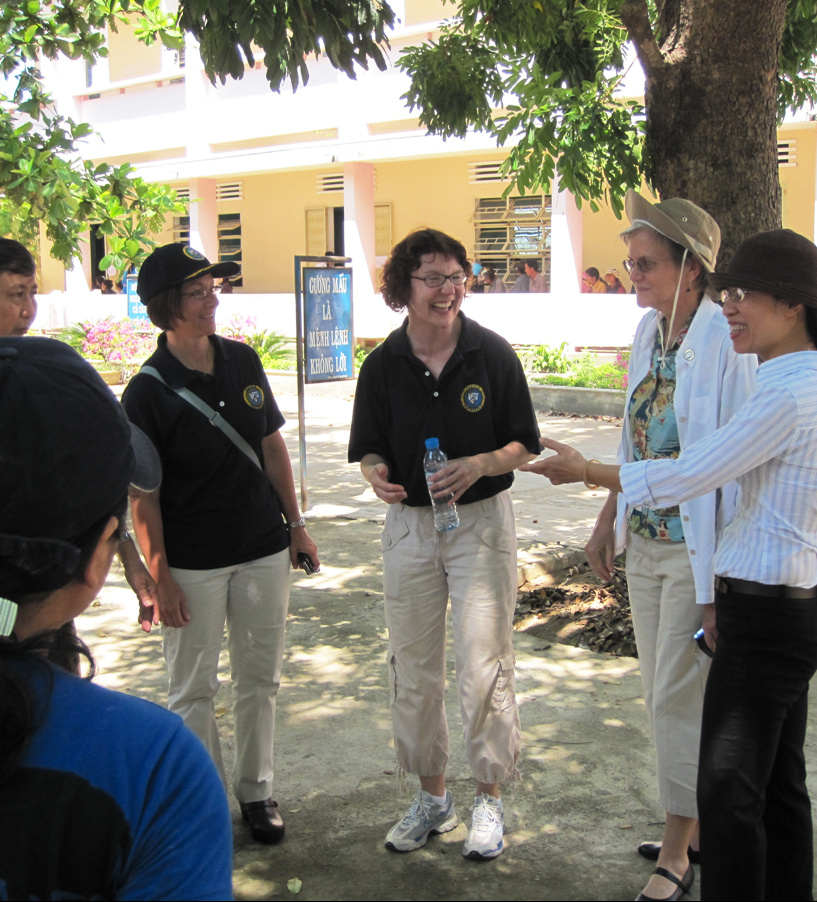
Commodore Franchetti and Acting Consul General Dickey Speak at a Medical Civic Action Program

Commodore Lisa Franchetti, mission commander of Pacific Partnership 2010, and U.S. Consulate Ho Chi Minh City Acting Consul General Angela Dickey speak at a medical civic action program in Vietnam in May during Pacific Partnership 2010.